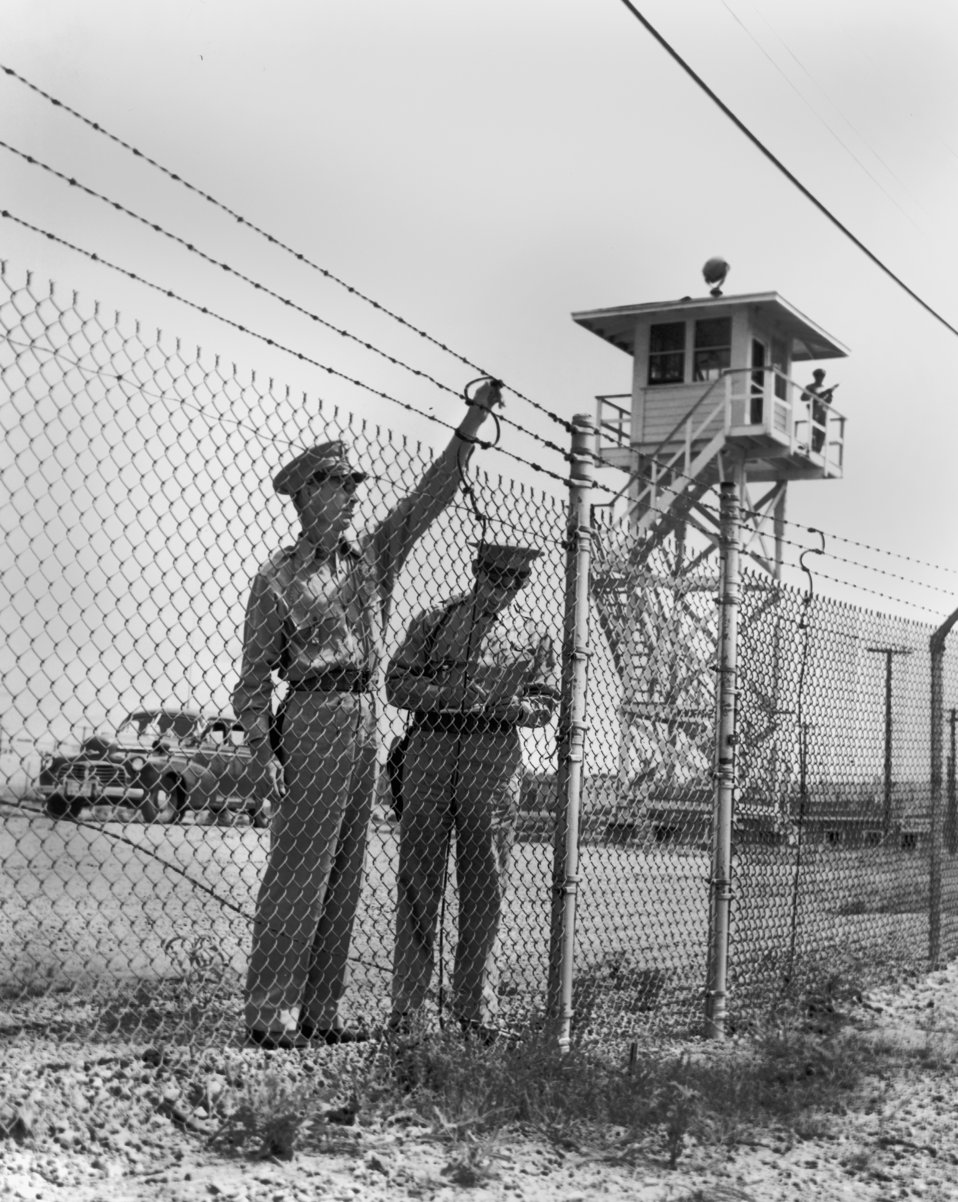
AEC ( Atomic Energy Commision) Security Patrol Oak Ridge

3627-27 DOE photo Ed Westcott AEC ( Atomic Energy Commision) Security Patrol Oak Ridge Tennessee
7/1947